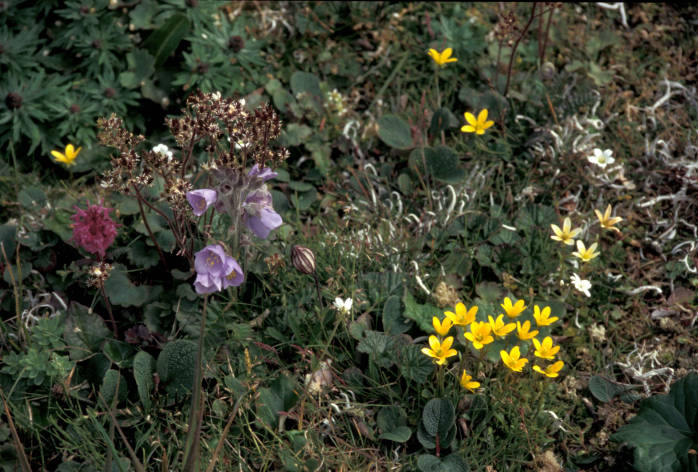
box saxifrage, Jacob's ladder, lousewort

Alaska Maritime National Wildlife Refuge